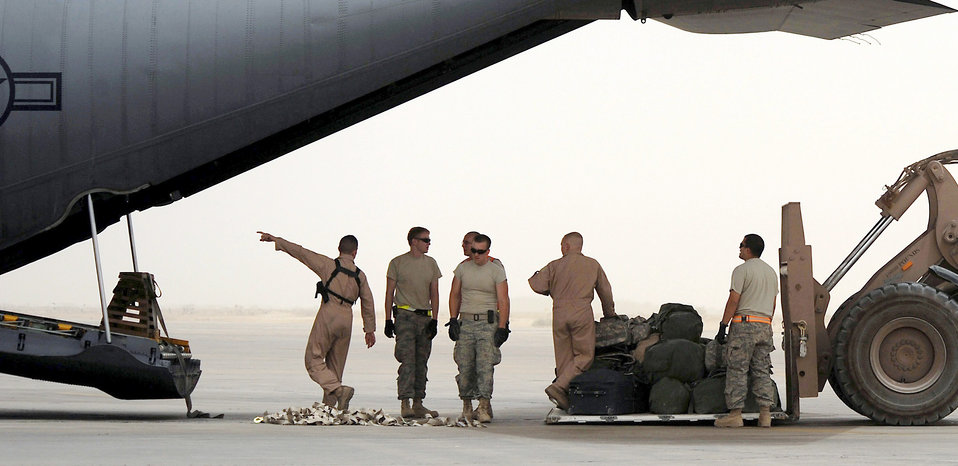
'Milk stool'

Loadmasters and a crew from the 447th Expeditionary Logistics Readiness Squadron at Sather Air Base, Iraq, load a baggage pallet onto a C-130 Hercules June 3, 2008. Sitting on the C-130's cargo ramp is a